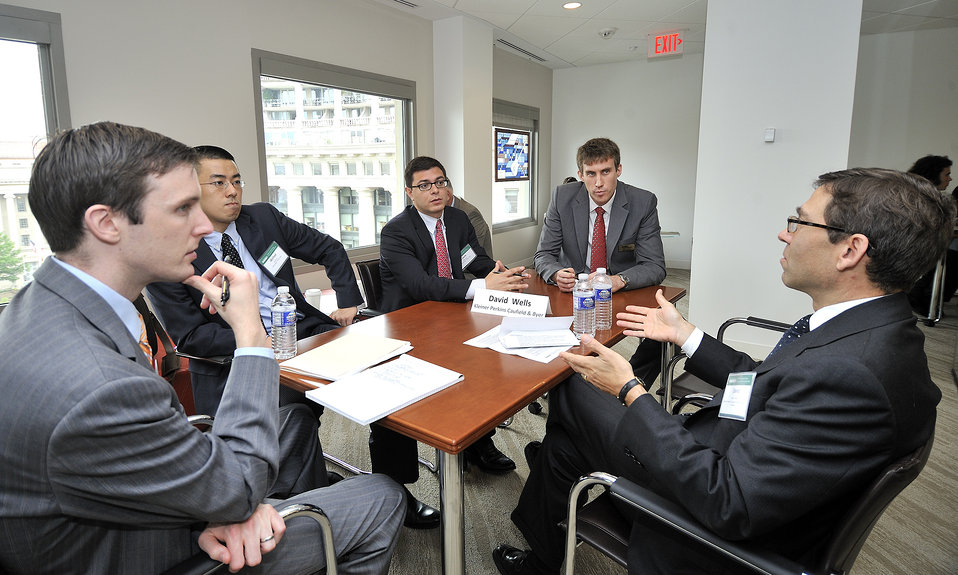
National Clean Energy Business Plan Competition

The National Clean Energy Business Plan Competition inspired nearly 300 university teams across the country to create new businesses to commercialize promising energy technologies developed at U.S. universities and the National Laboratories.